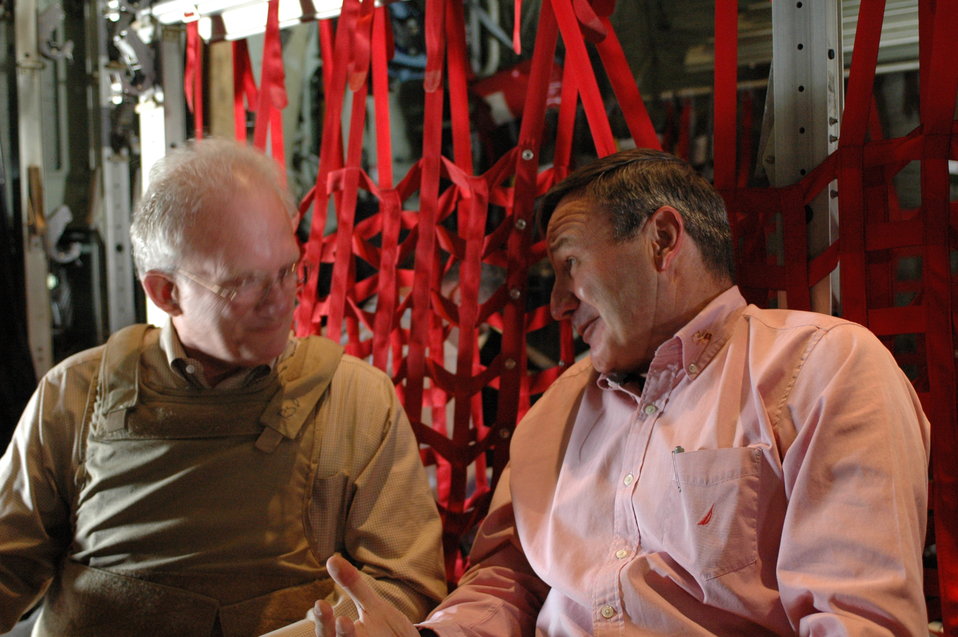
CODEL Berman